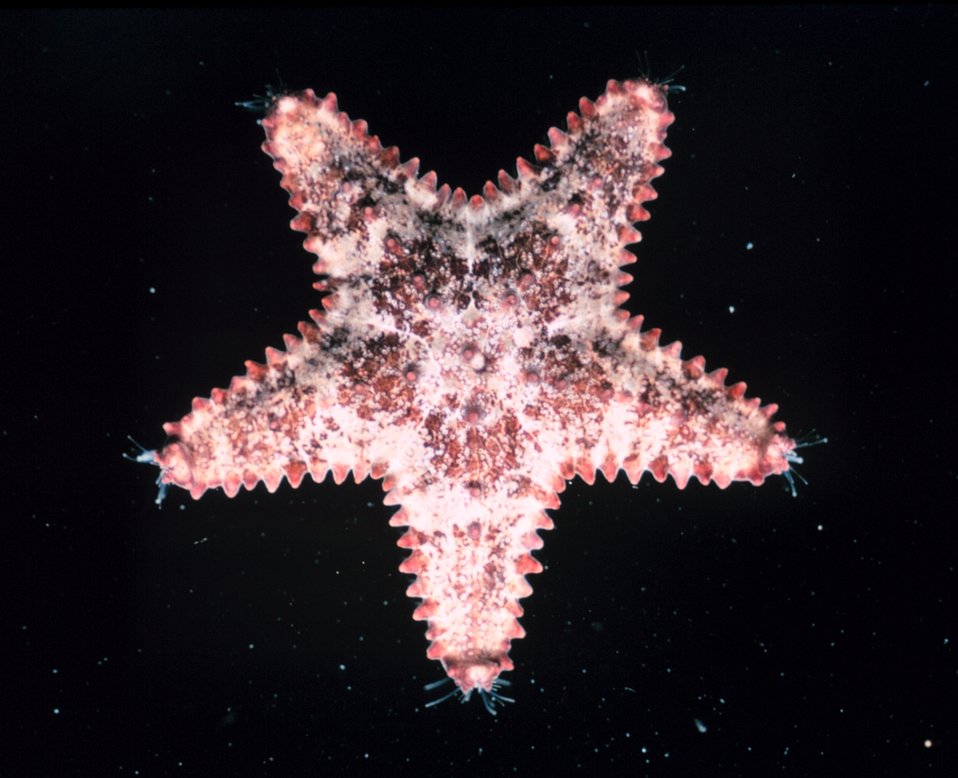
Starfish